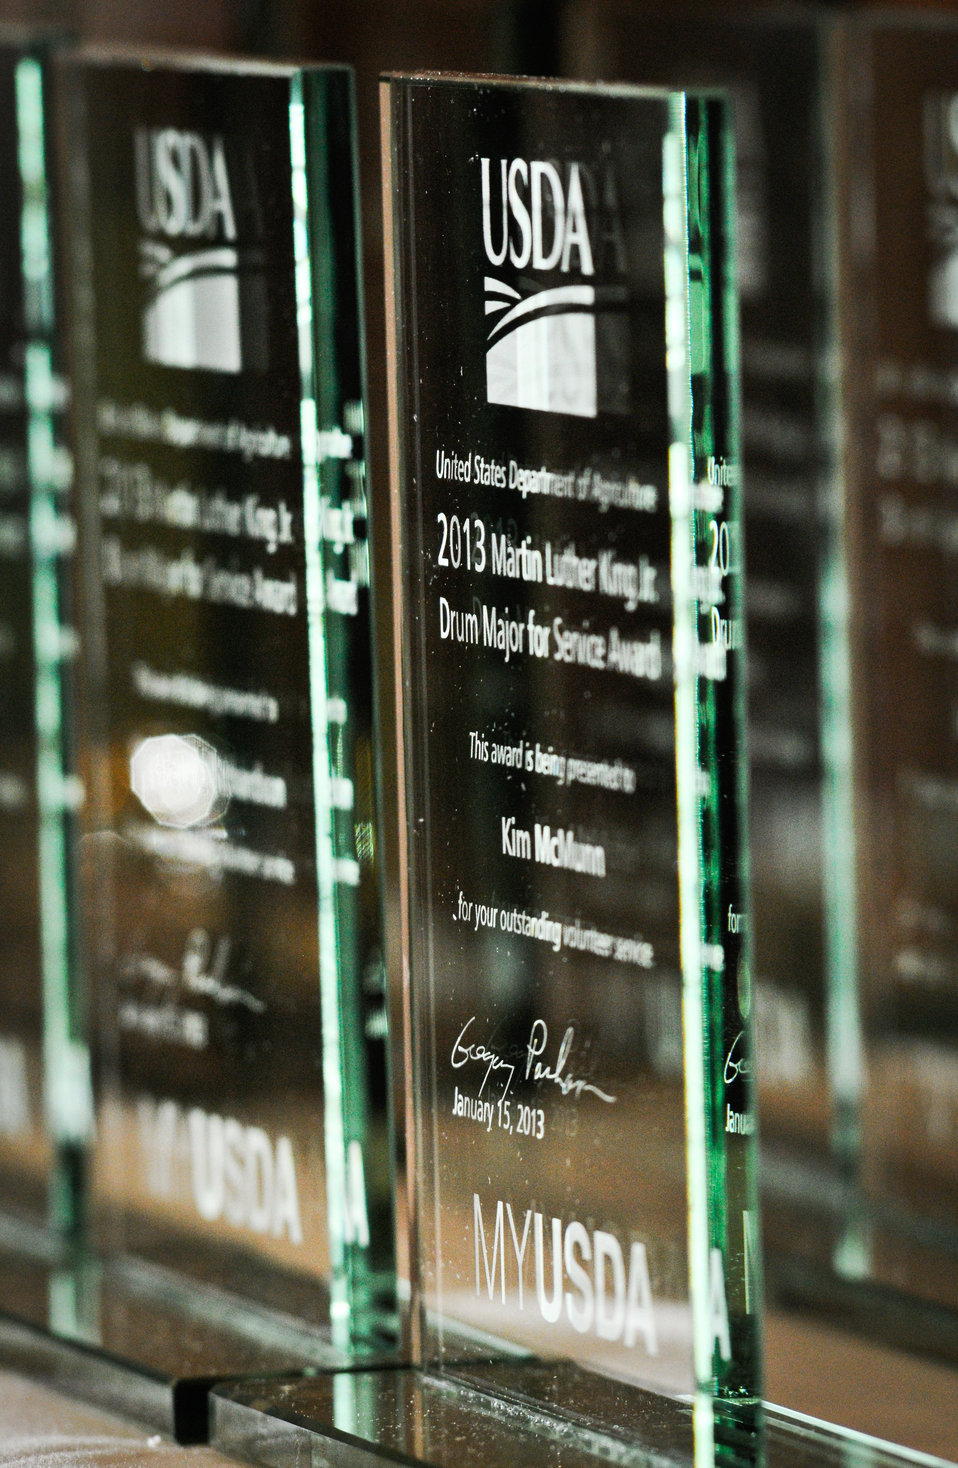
U.S. Department of Agriculture (USDA) Dr. Martin Luther King, Jr. National Service Day Drum Major for Service Awards, in Washington, D.C., on Tuesday, Jan. 15, 2013.